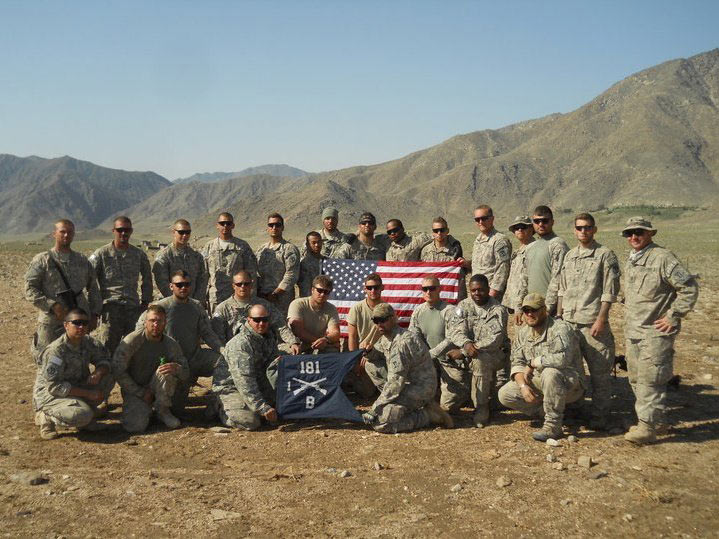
Samuel Parker-Northeast Region

Samuel Parker grew up in Western Massachusetts and began his military career by enlisting in the Army in 2008. He currently works as a security guard at the Northeast Regional Office in Hadley, Massachusetts, and is still and active member of the Army National Guard. Parker deployed with Bravo Company 1-181 Infantry Battalion out of Gardner, MA, serving in Afghanistan from July 2010 – August 2011, where he was awarded the Purple Heart for injuries received in combat.